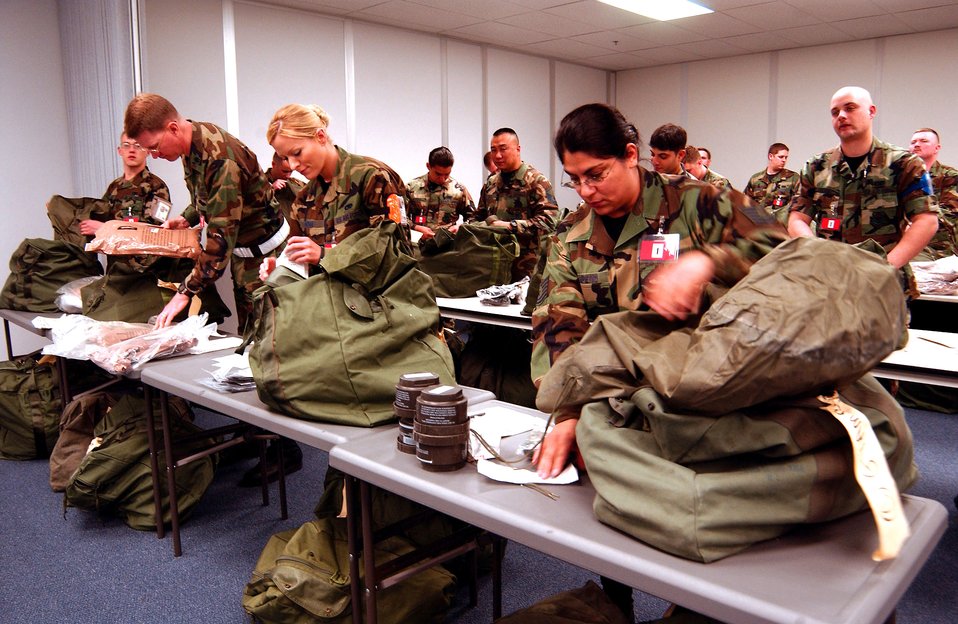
Thunderbolt in Michigan

Airmen from McChord Air Force Base, Wash., go through their mobility bags to make sure they have the items they will need for their